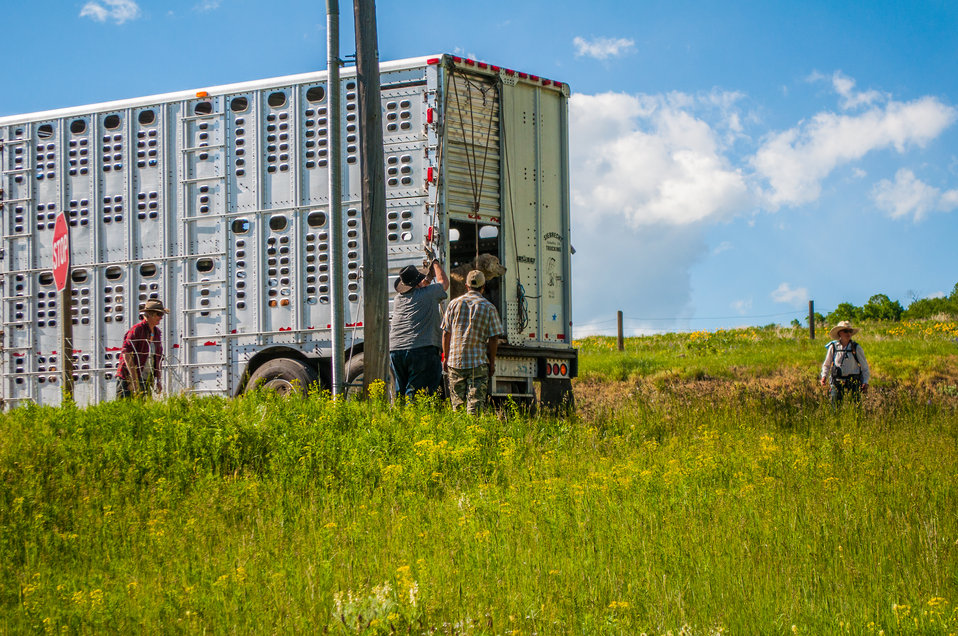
Goat landing on Bozeman Fish Technology Center

On June 8 at 5:00 p.m., 409 yearling domestic goats were off-loaded on the Bozeman Fish Technology Center (BFTC) campus. Thus begins a 3-4 year project of monitored targeted grazing and applications of friendly insects to control noxious weeds and manage brush overgrowth on property of the U.S. Fish and Wildlife Service BFTC.

Purposes of this effort are to reduce the presence of undesirable vegetation, promote restoration of native plants, and assist with fire protection by reducing burnable plant biomass.

The cooperative venture involves the U.S. Fish and Wildlife Service, Montana Outdoor Science School, Friends of the Bozeman Fish Technology Center, Gallatin Valley Land Trust, U.S. Forest Service, and Prescriptive Livestock Services. Integrated Weed Control is supplying the insects as an in-kind contribution to the project, and has applied insects on the BFTC’s 'hot spots' in previous years.